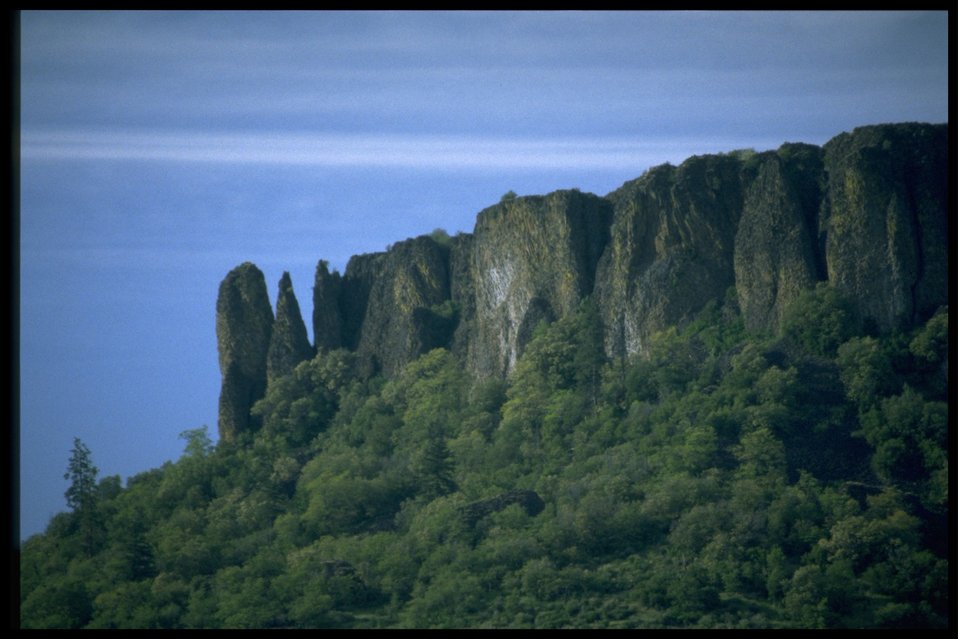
Scenic view of Lower Table Rock.